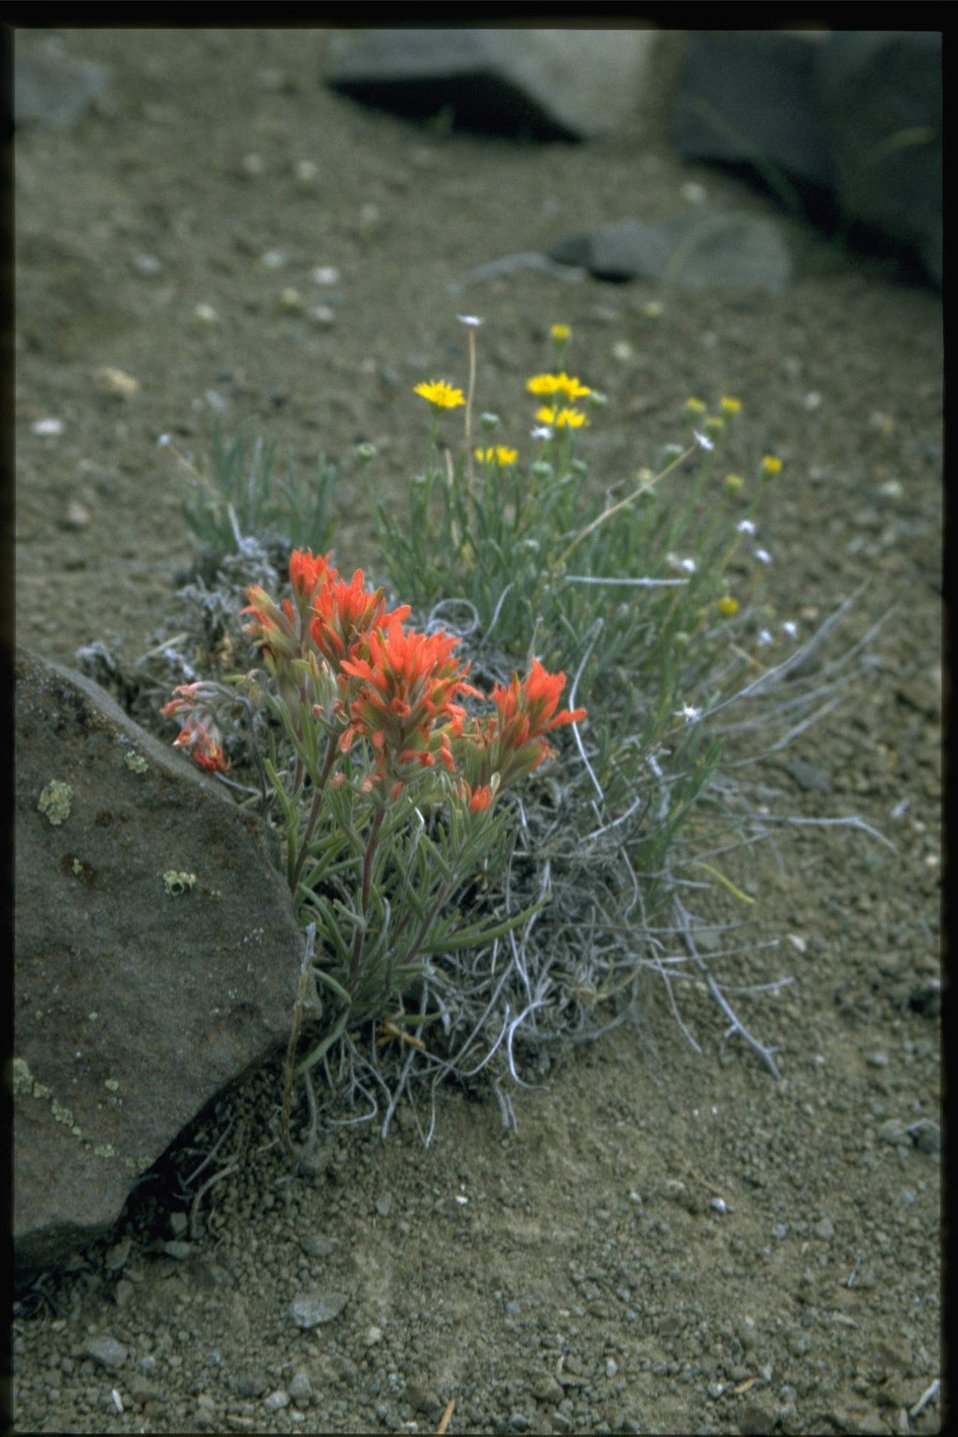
Medium shot of Indian Paintbrush wildflowers.